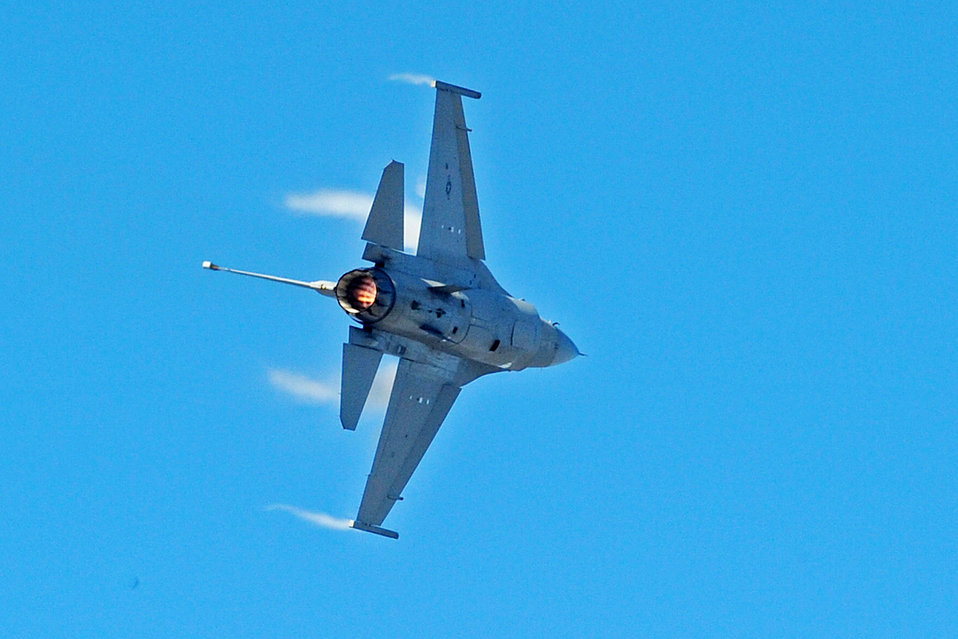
Demo teams receive 2010 certification

Capt. Ryan Corrigan performs for Gen. William M. Fraser III Feb. 3, 2010, at Langley Air Force Base. Captain Corrigan is an F-16 Viper east demonstration team pilot and General Fraser is the commander of the Air Combat Command.